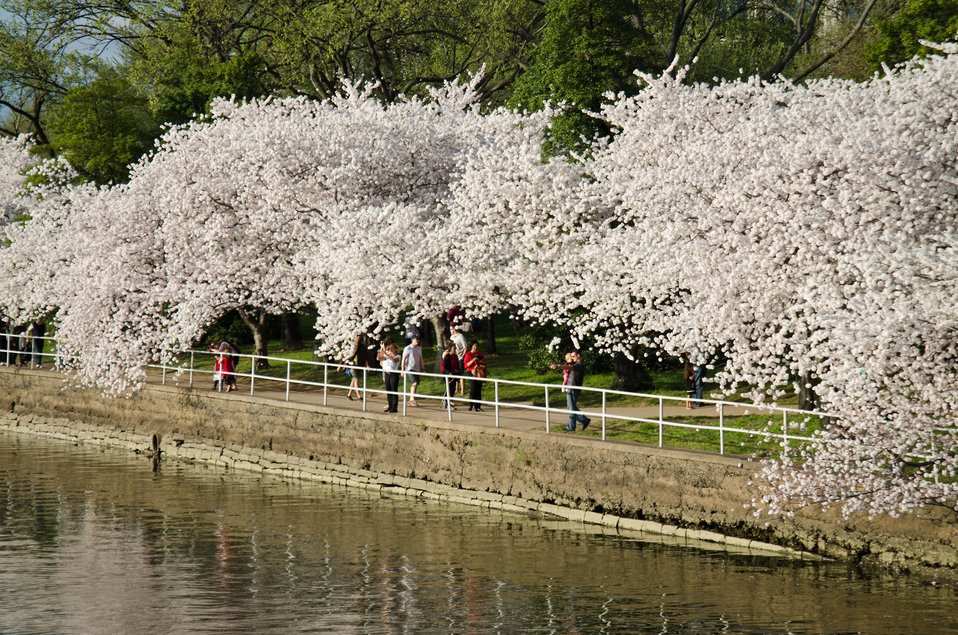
Cherry blossoms at the Tidal Basin in Washington, D.C., on Tuesday, March 20, 2012.